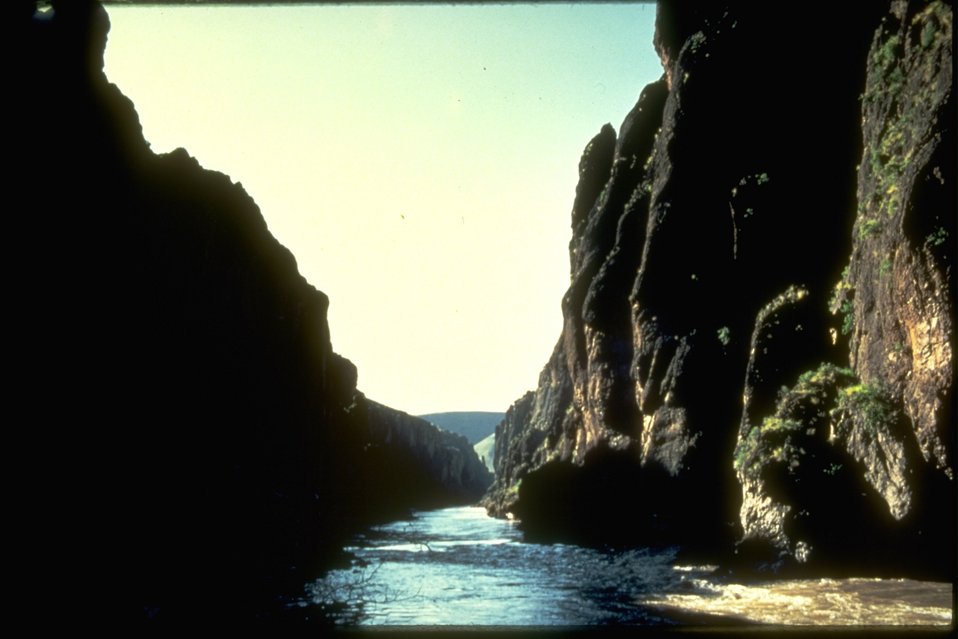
Owyhee River above Rome, Oregon. Used in brochure.